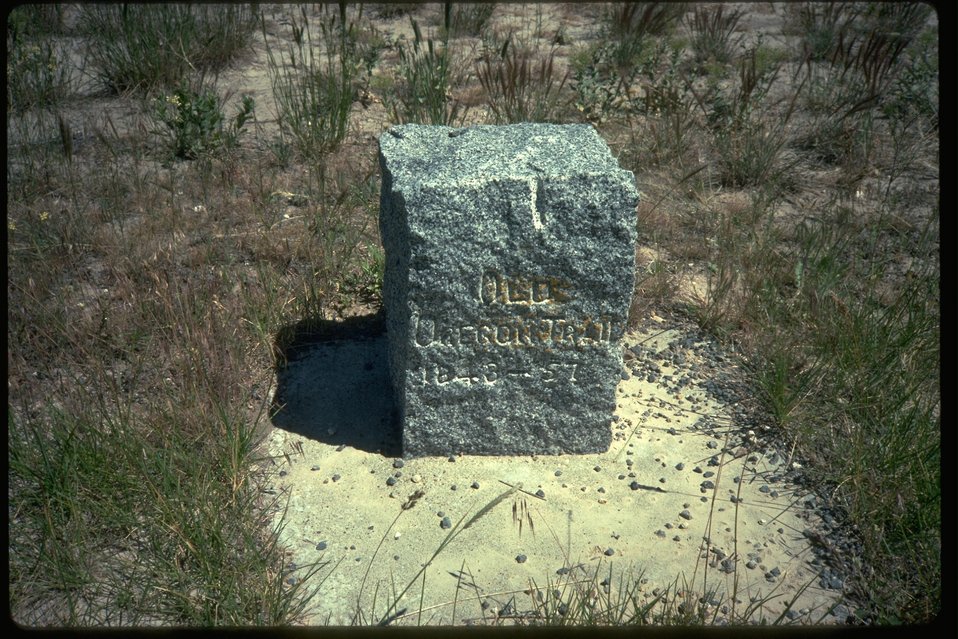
Ezera Meeker at Flagstaff Hill.